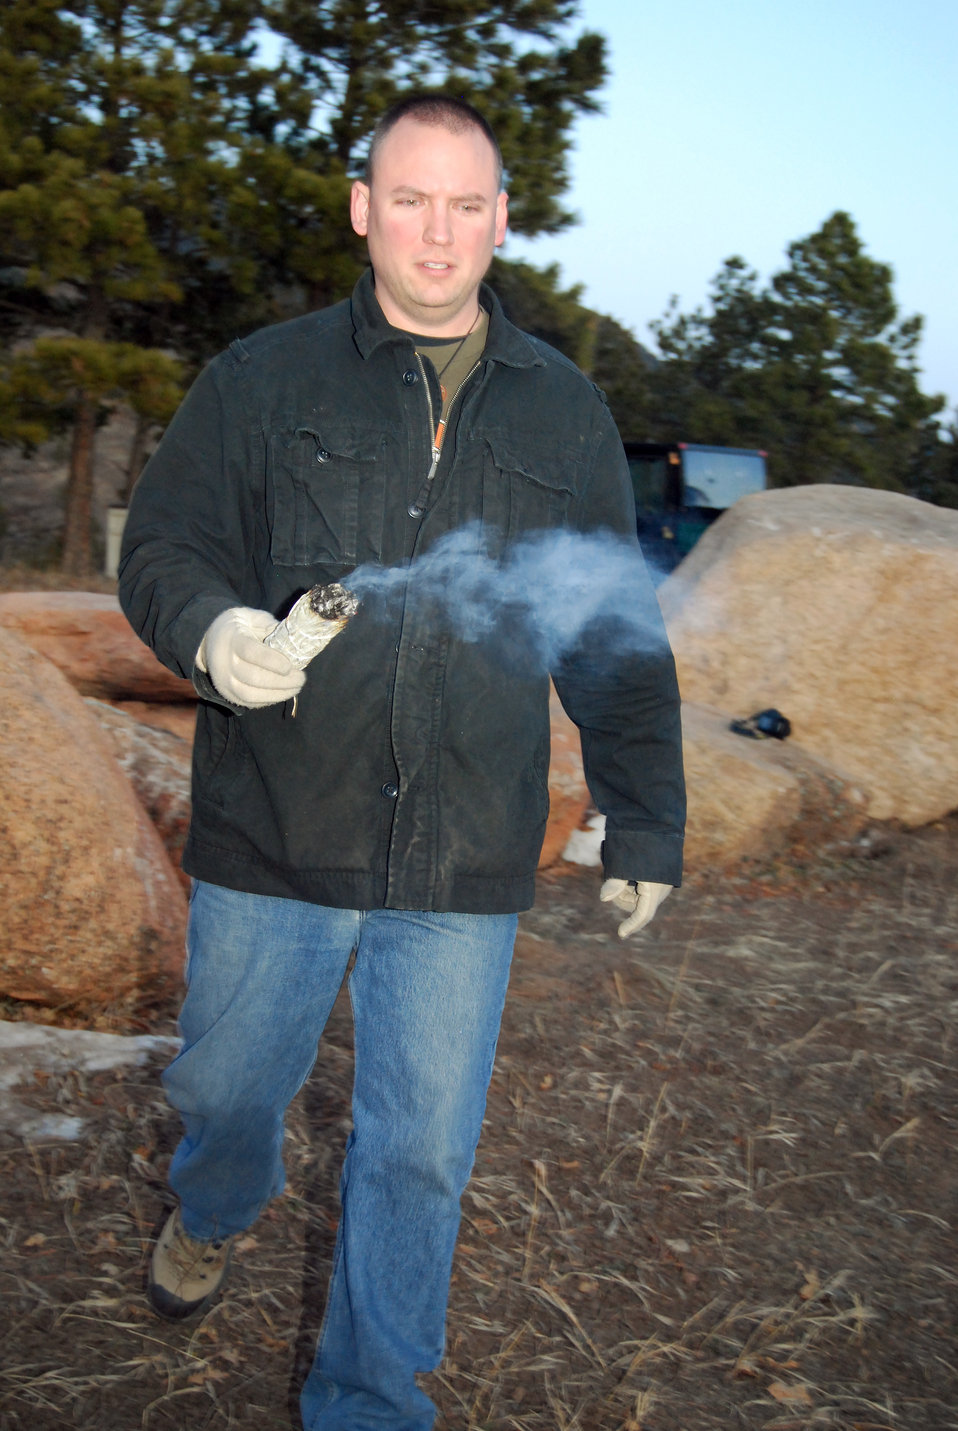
Academy chapel to add outdoor circle to worship areas

Tech. Sgt. Robert Longcrier uses white sage to consecrate a Pagan worship area on the hill overlooking the Cadet Chapel and the Visitor Center just after sunrise on the winter solstice Dec. 21, 2009, at the U.S. Air Force Academy, Colo. The chapel is scheduled to officially designate the circle as a Pagan chapel during a dedication ceremony in March 2010. Sergeant Longcrier is the Pagan ley leader at the Academy.